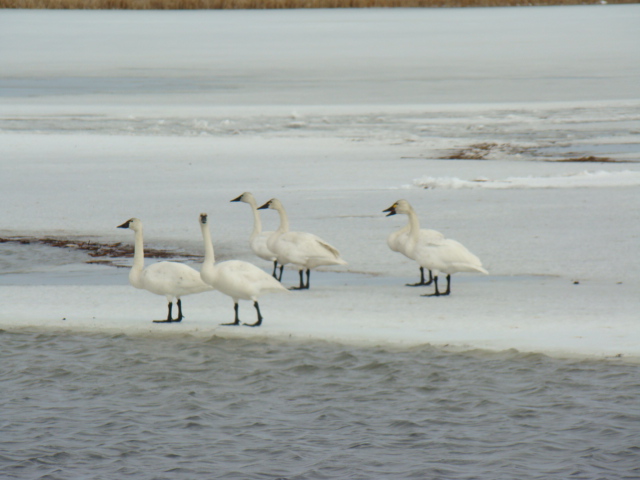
Tundra Swans

The lands of the refuge were established to protect and provide habitat for migratory birds that cross State lines and international borders and are by law a Federal trust responsibility.
The refuge is of great value to waterfowl and shorebirds, as well as other migrating water-dependent bird species, because of the diversity of wetland and upland habitats that provide for the diverse life cycle needs of these species.